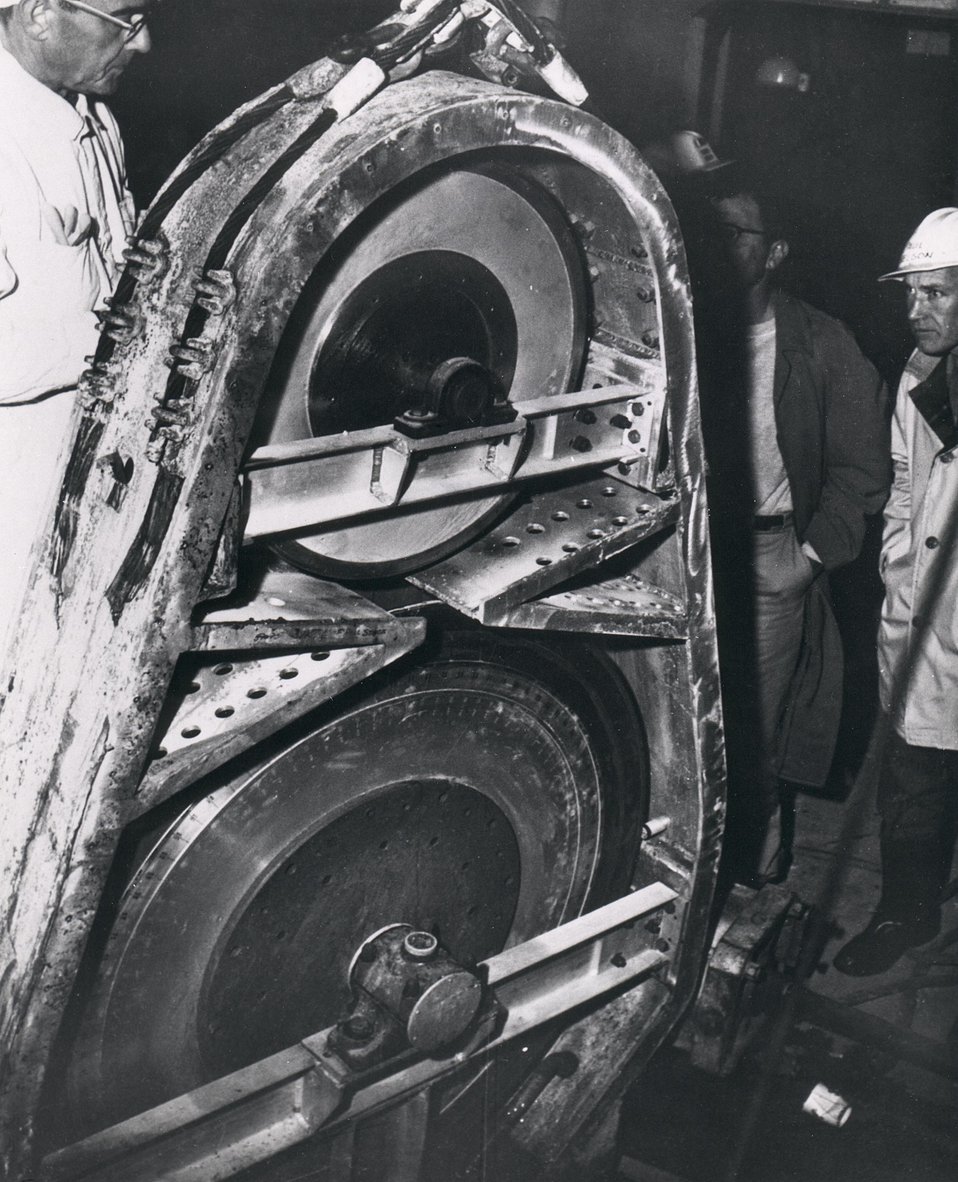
Photo shows the neutron wheels which made neutron cross-section measurements, one of the five technical objectives Gnome, after their recovery from the tunnel 1,200 feet beneath the New Mexico desert. Circa 1963.